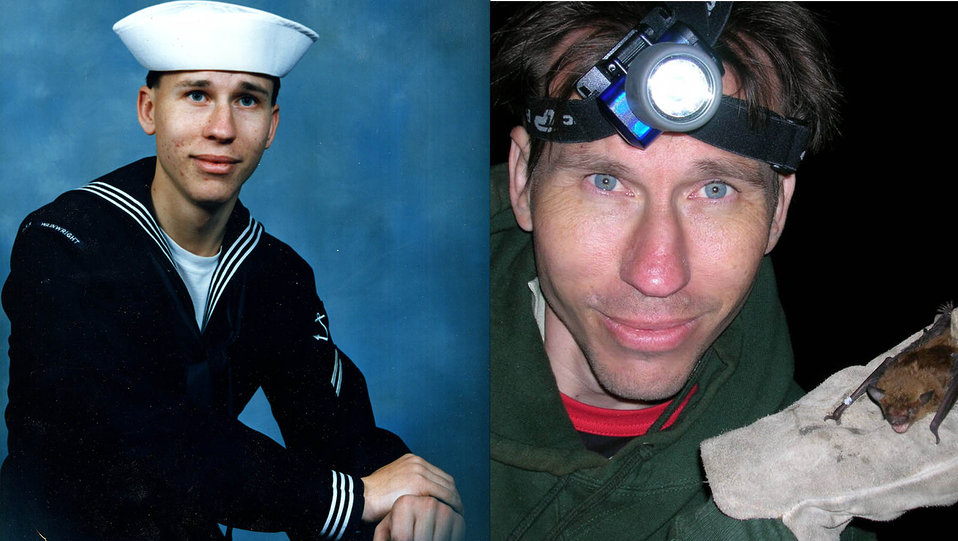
James Gruhala

Jim Gruhala.
.
James M. Gruhala, Fish & Wildlife Biologist with the Kentucky Ecological Services Office, served in the U.S. Navy after graduating High School in October 1990 through October 1992 . He served as a Seaman Apprentice on board the USS Wainwright (CG-28) and performed seamanship duties in the Atlantic, Caribbean, and at various Atlantic ports. .
He reentered government service as a forest technician with the USDA Forest Service on the Mark Twain National Forest in 2003 while earning a B.S. Degree in Wildlife Conservation and Management from Missouri State University. Since then he has worked in other positions with the USDA Forest Service, US Bureau of Land Management, and USFWS before assuming his current duties as a Fish & Wildlife Biologist for the USFWS’s Kentucky Ecological Services Office in Frankfort, Kentucky in April 2009.